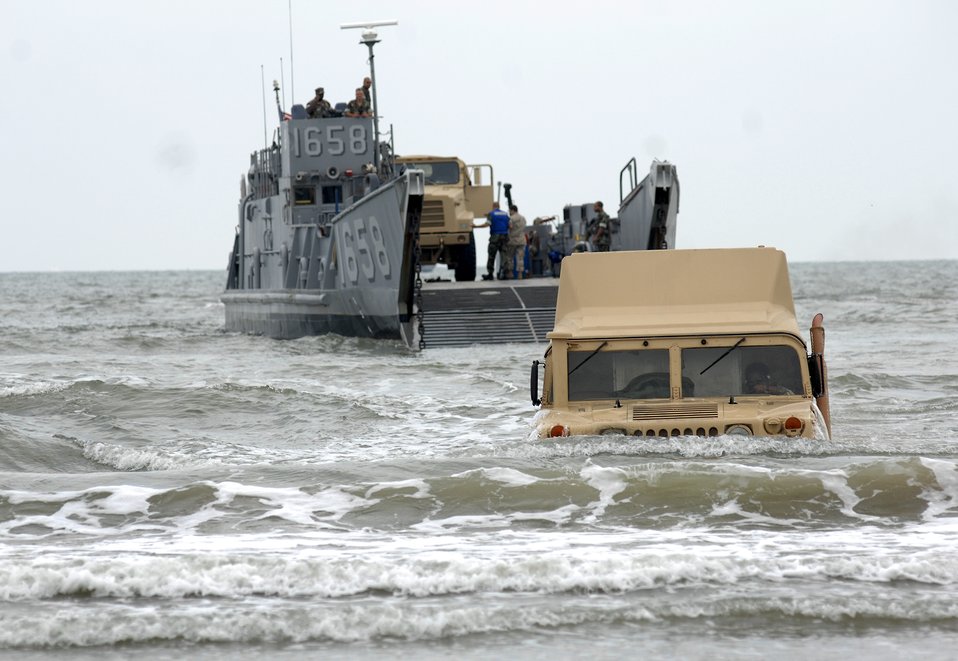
USS Nassau delivers critical help to Galveston

A high mobility multipurpose wheeled vehicle or Humvee exits from an utility landing craft Sept. 18 on the beach near Galveston, Texas. The Humvee was from the amphibious assault ship USS Nassau anchored off Galveston to provide disaster response and aid to civil authorities as directed in the wake of Hurricane Ike.